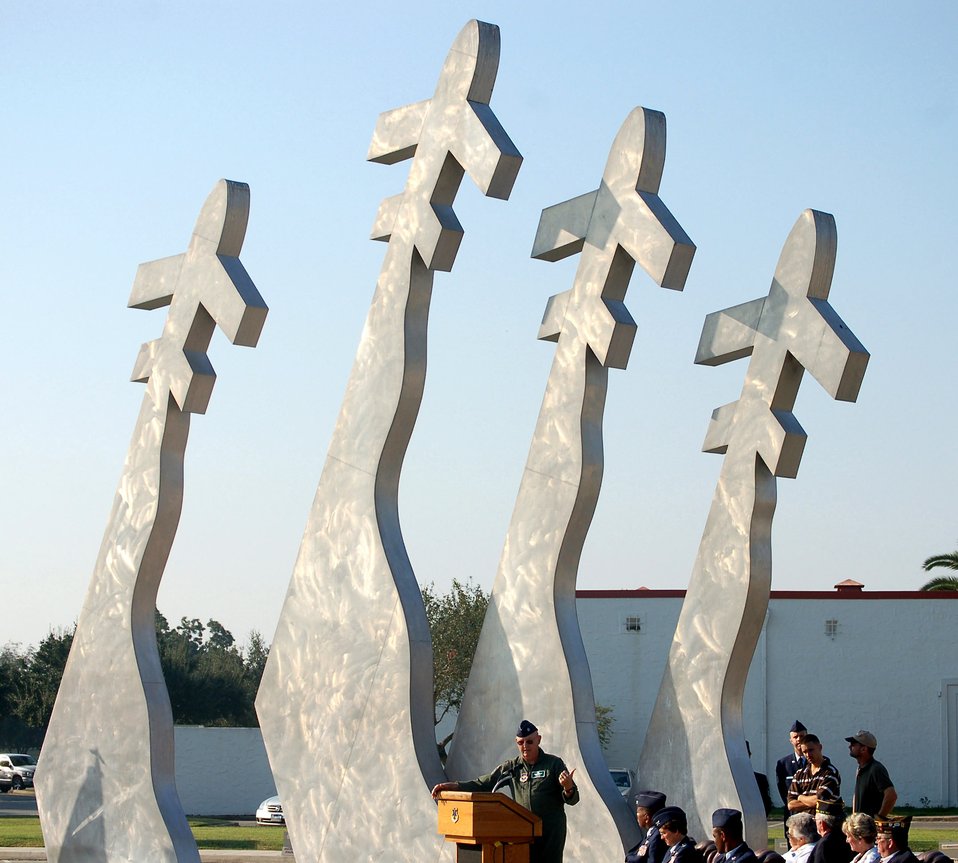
POW/MIA Recognition Day: Remembering those who are not home

Retired Lt. Col. John Yuill speaks Sept. 21 at a Prisoner of War/Missing in Action recognition ceremony held at Randolph Air Force Base, Texas. The ceremony was part of National POW/MIA Recognition Day. Colonel Yuill, a former B-52 Stratofortress pilot, was a POW at the infamous